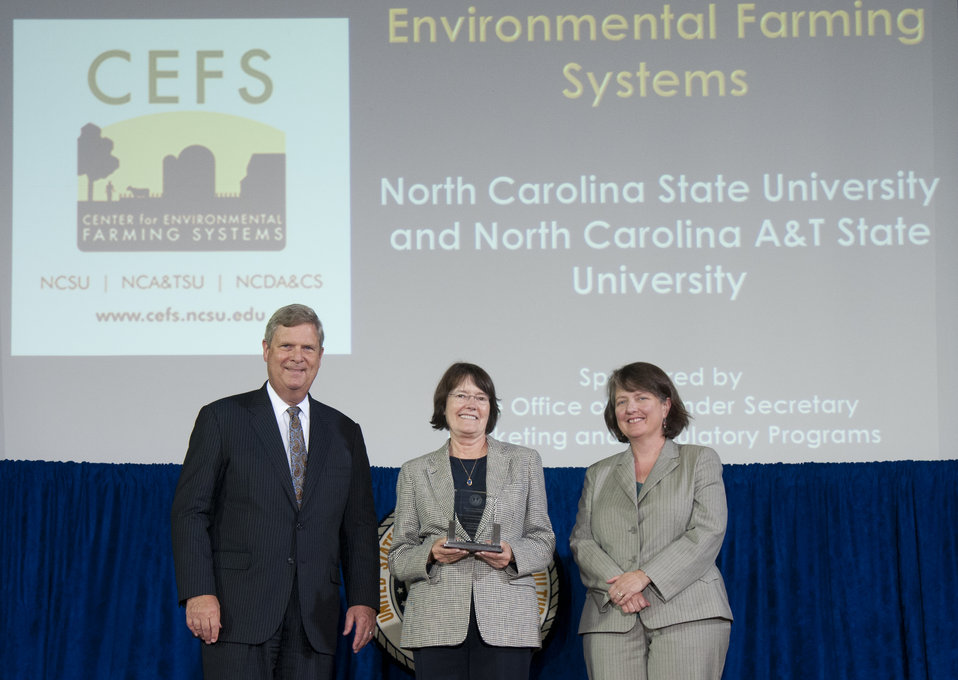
Agriculture Secretary Tom Vilsack and Agriculture Deputy Secretary Kathleen Merrigan present the Secretary’s Honor Award to Center for Environmental Farming Systems, North Carolina State University, Raleigh, NC and North Carolina A&T State University, Greensboro, NC group leader Dr. Nancy G. Creamer at the U.S. Department of Agriculture (USDA) 64th Annual Honor Awards Ceremony in Washington, D.C. on Wednesday, Sept. 12, 2012. The Center for Environmental Farming Systems, North Carolina State University, Raleigh, NC and North Carolina A&T State University, Greensboro, NC created a statewide, inclusive movement to build a sustainable local food economy in North Carolina through engagement and partnership.